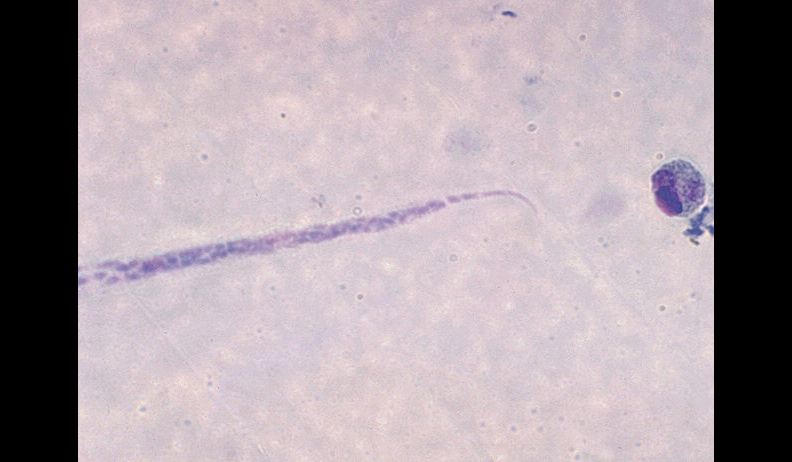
Mansonella ozzardi, posterior end; the cause of filariasis.